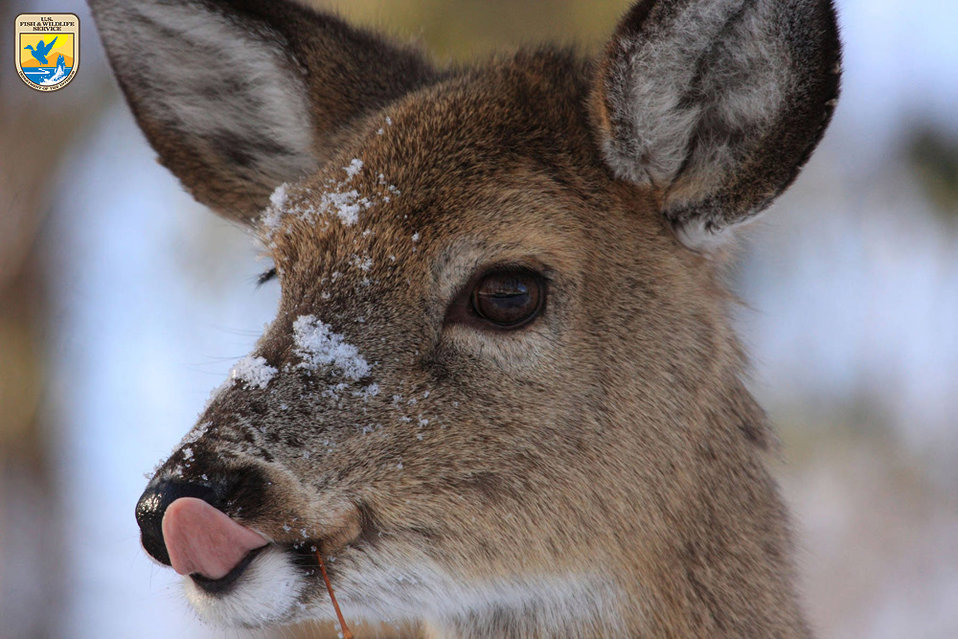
Deer in the snow

John Heinz National Wildlife Refuge, PA